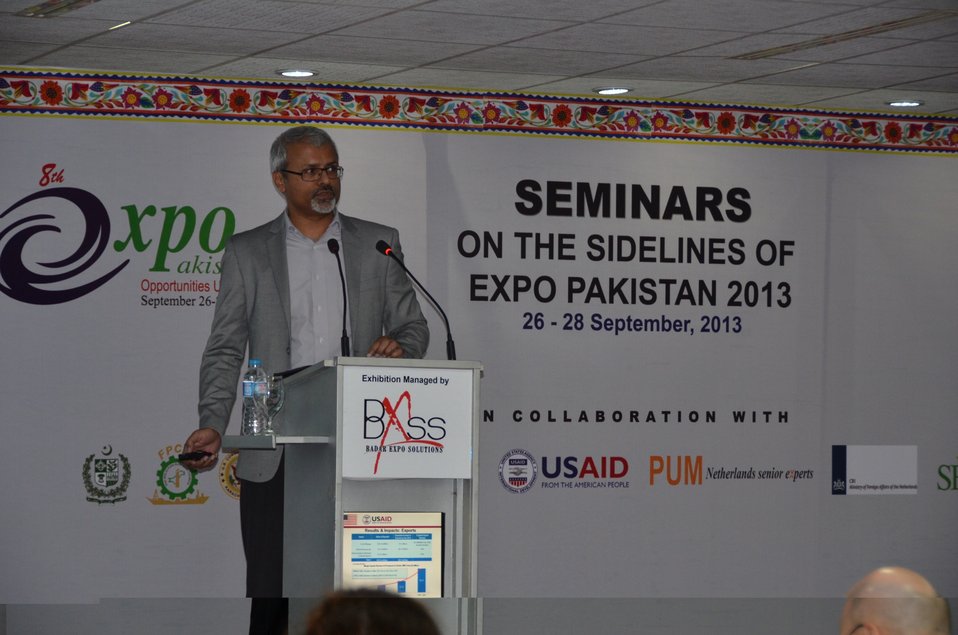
USAID Firms Project at Expo Pakistan 2013

USAID Firms Project Presentation at the TDAP Seminar